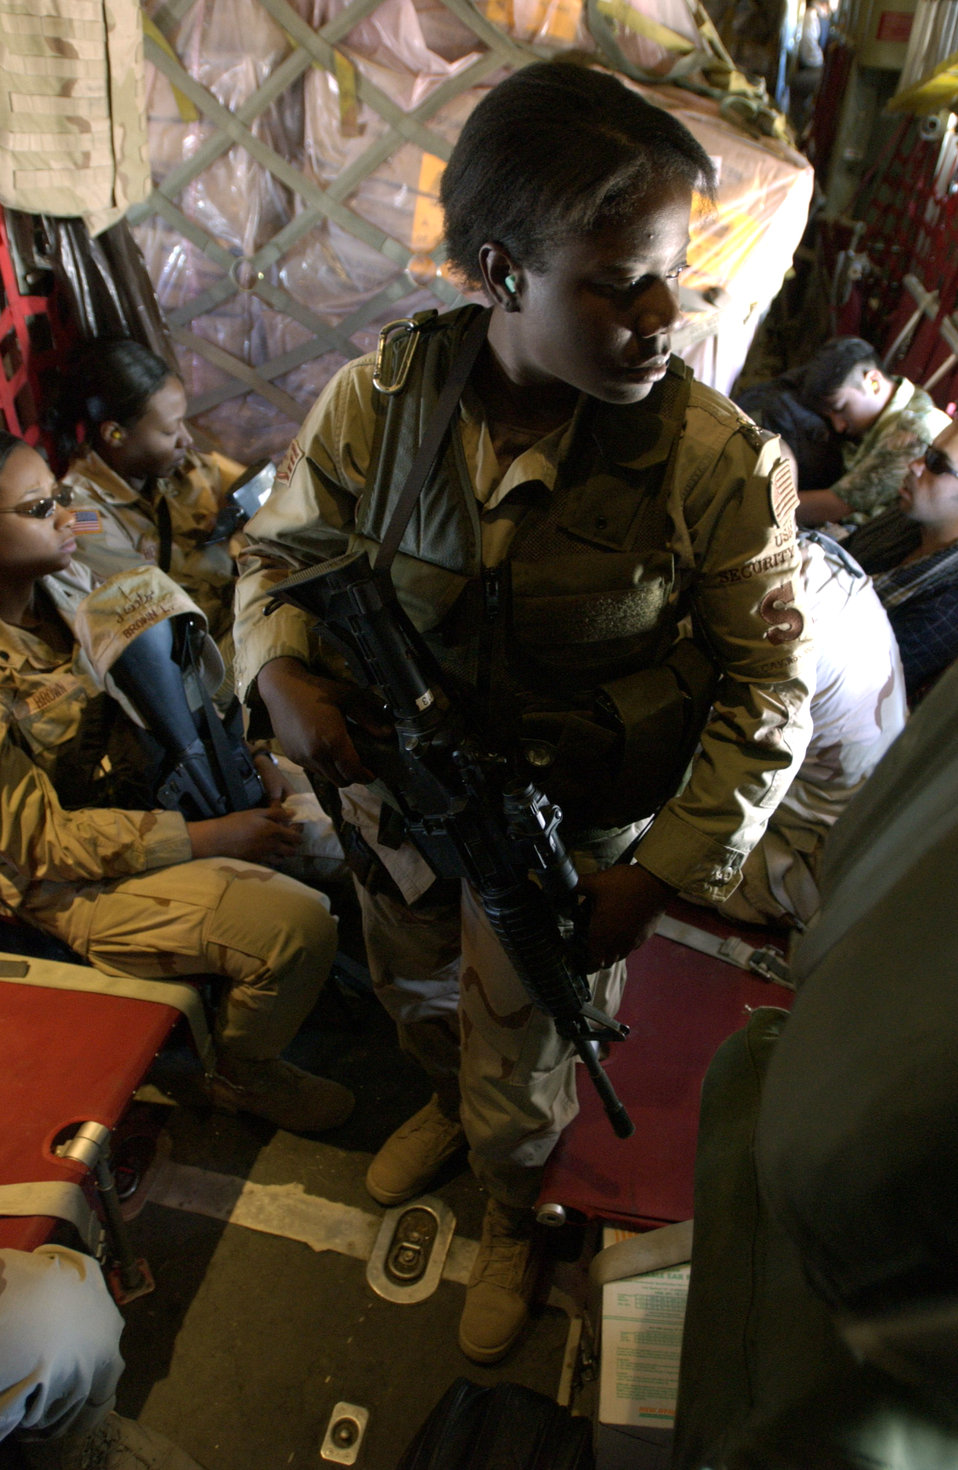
Guardsmen making K-2 connections

KARSHI-KHANABAD AIR BASE, Uzbekistan -- Staff Sgt. Erica Cummings is one of the two "fly-away" security forces Airmen who accompany people and cargo being moved to various "high-risk" landing zones throughout Southwest Asia.